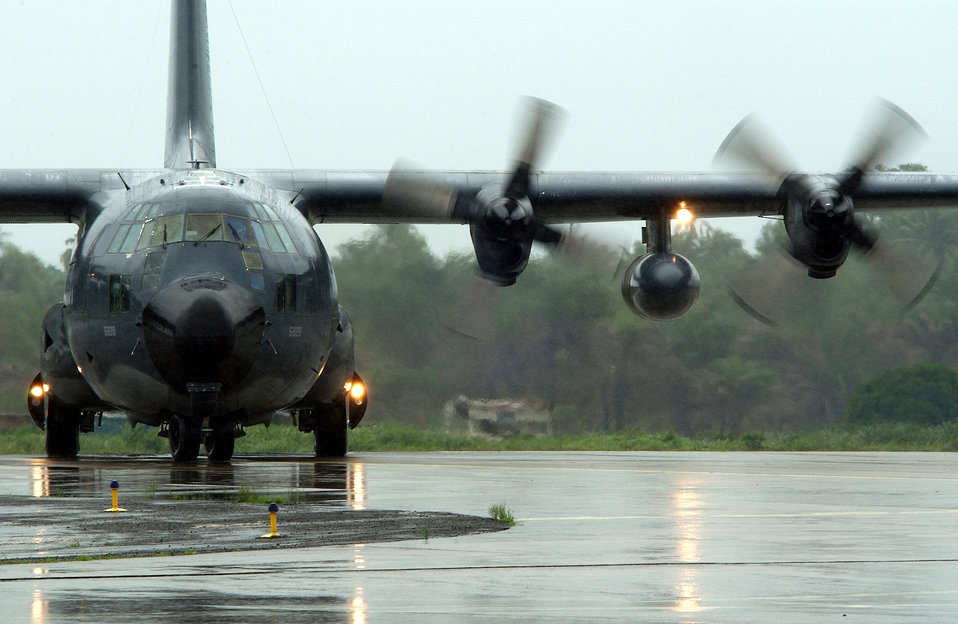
More support in Liberia

LUNGI, Sierra Leone -- An Air Force MC-130P Combat Shadow lands here with supplies and people headed for the U.S. Embassy in Monrovia, Liberia on July 28. The aircraft is assigned to the 352nd Special Operations Group at Royal Air Force Mildenhall, England. The 398th Air Expeditionary Group is here to provide personnel recovery and emergency evacuation capability for the humanitarian assistance survey team and the fleet antiterrorism security team in Liberia.